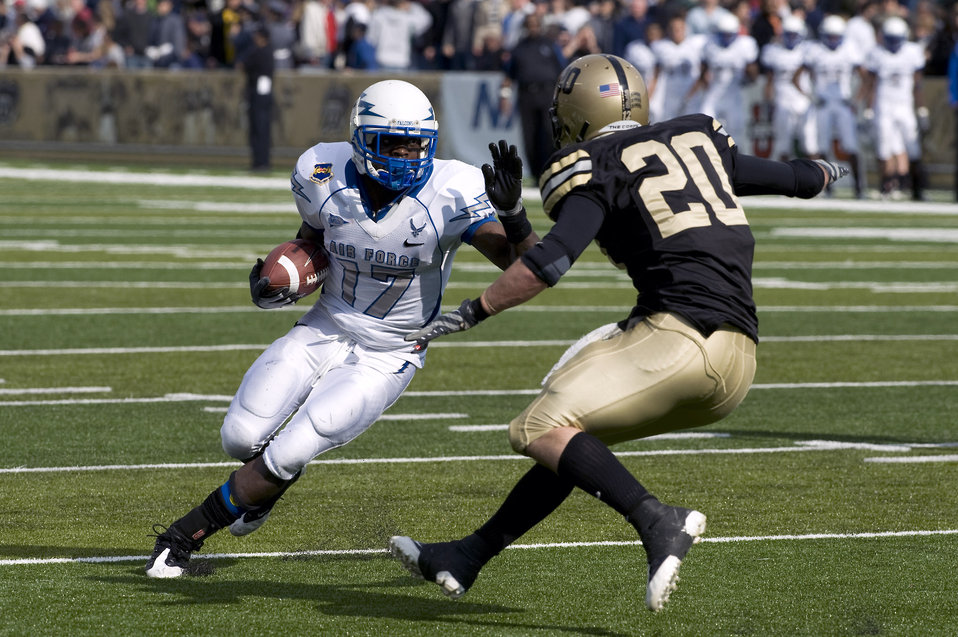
Football: Falcons top Army in slugfest

U.S. Air Force Academy quarterback Aster Clark attempts to avoid a tackle by U.S. Military Academy defensive back Lowell Garthwaite Nov. 1 at West Point, N.Y. Air Force defeated Army in their annual battle 16-7.